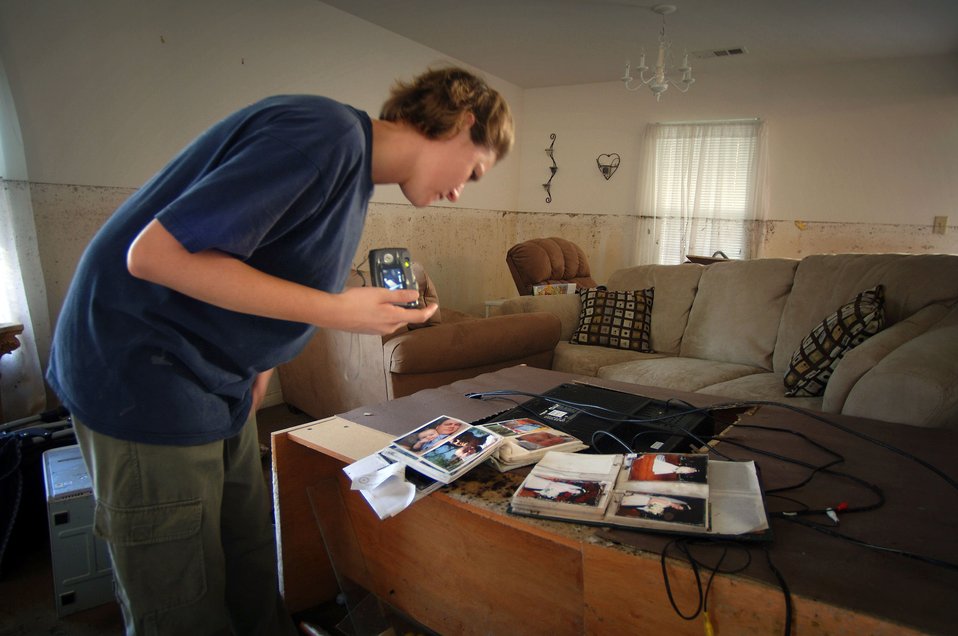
Trying to recover

KEESLER AIR FORCE BASE, Miss. -- Beth Wilson takes a break while helping Staff Sgt. Shawn Mitchell and his wife recover whatever possessions were left undamaged by Hurricane Katrina's massive storm surge. Sergeant Mitchell and family members made the four-hour drive here from Alabama where they had taken refuge. Sergeant Mitchell is a telephone maintenance specialist with the 81st Communications Squadron.